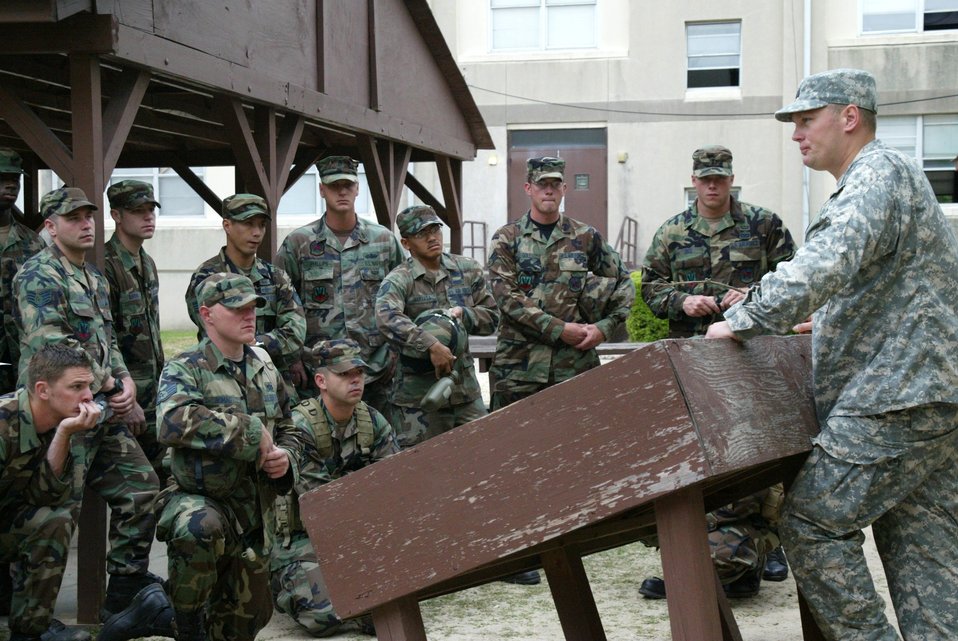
Air Force engineers take a jump

Capt. Brent Legreid briefs members of his team while preparing for a Joint Forced Entry Exercise with the Army's 82nd Airborne Division at Pope Air Force Base, N.C., on Saturday, April 22, 2006. Captain Legreid is the airborne Red Horse project manager.